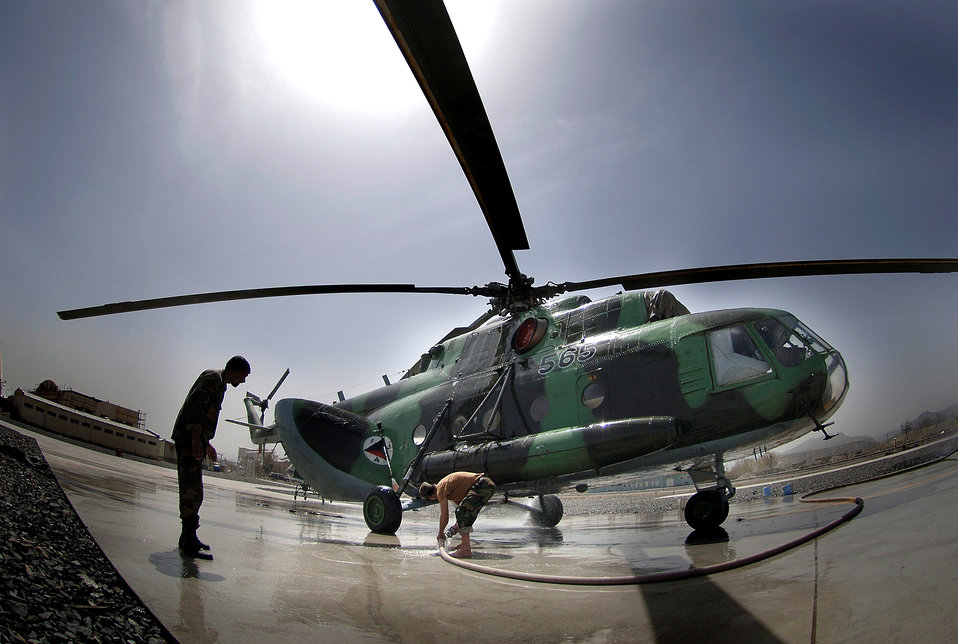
U.S. forces mentor Afghan Air Corps to 'stand on own'

Afghan National Air Corp maintainers wash down an MI-17 helicopter April 9 on the Kabul International Airport flightline. Air Force mentors assigned to Defense Reform Directorate Air Division under Combined Security Transition Command - Afghanistan provide guidance to soldiers with the Maintenance Operations Group for the ANAC.